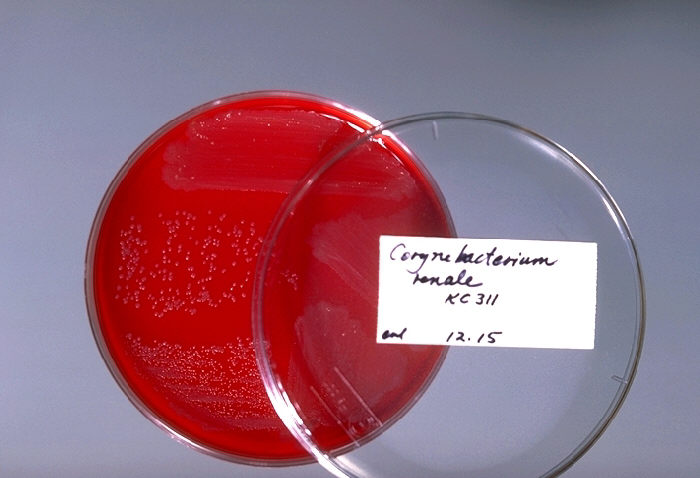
Blood agar plate culture of Corynebacterium renale.